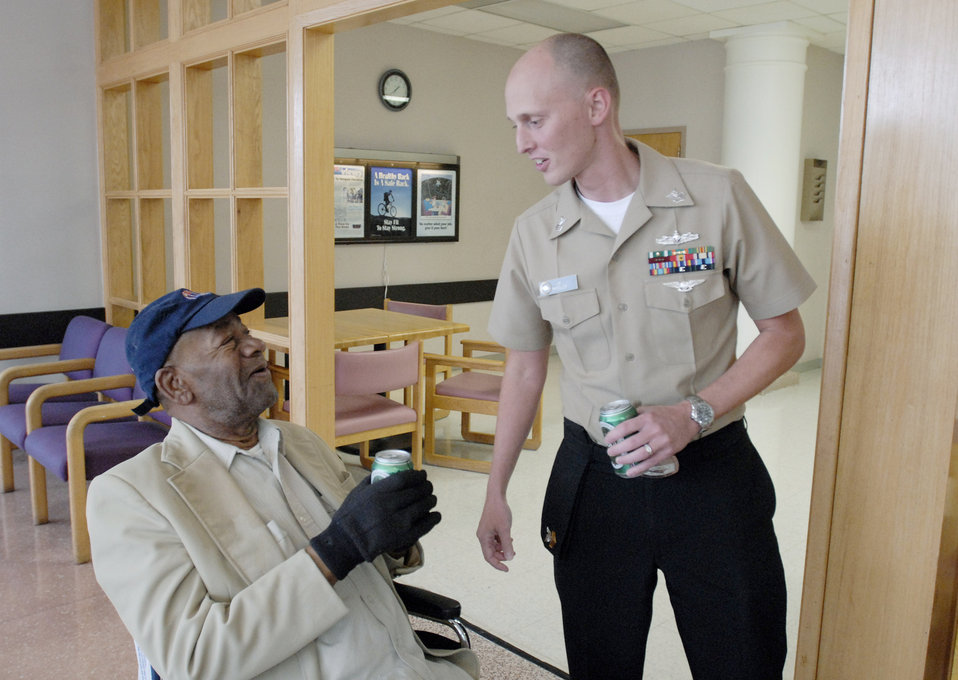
Joint Enlisted Council lift spirits at veterans home

Navy Petty Officer First Class Justin Wheeler chats with retired Army Master Sergeant Stonewall Jackson Oct. 16, 2009, during a visit to the U.S. Soilder's and Airmen's Home in Washington, D.C. Petty Officer Wheeler made the visit with the National Capital Region Joint Enlisted Council to lift the spirits of the residents. Mr. Jackson retired from the Army following 33 years of service and has been a resident of the home for 23 years.